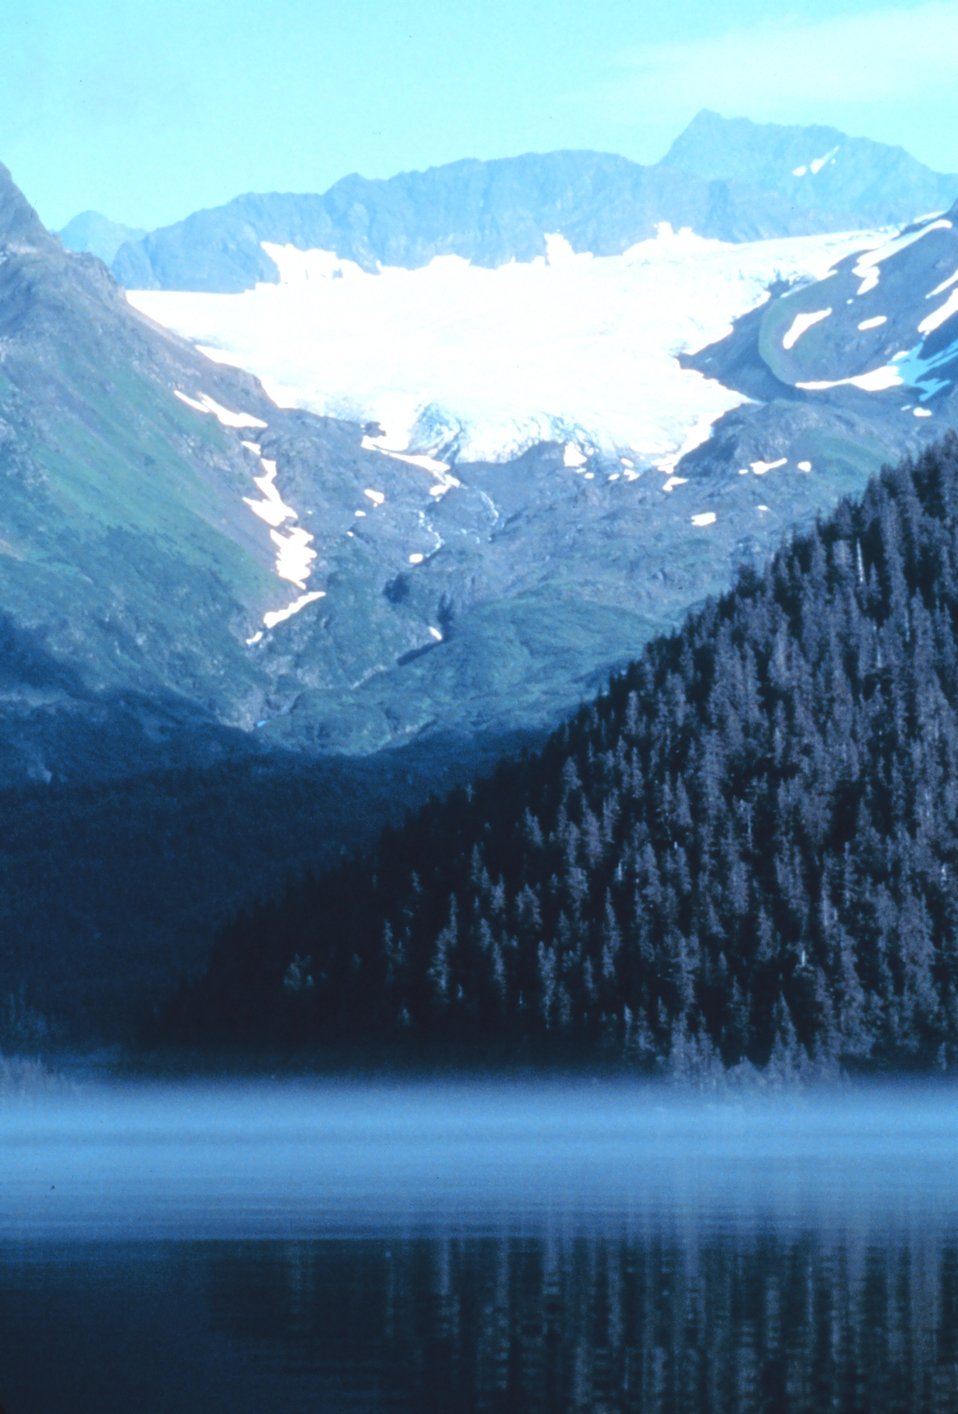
Mist below and glacier above while a high rocky peak dominates all.